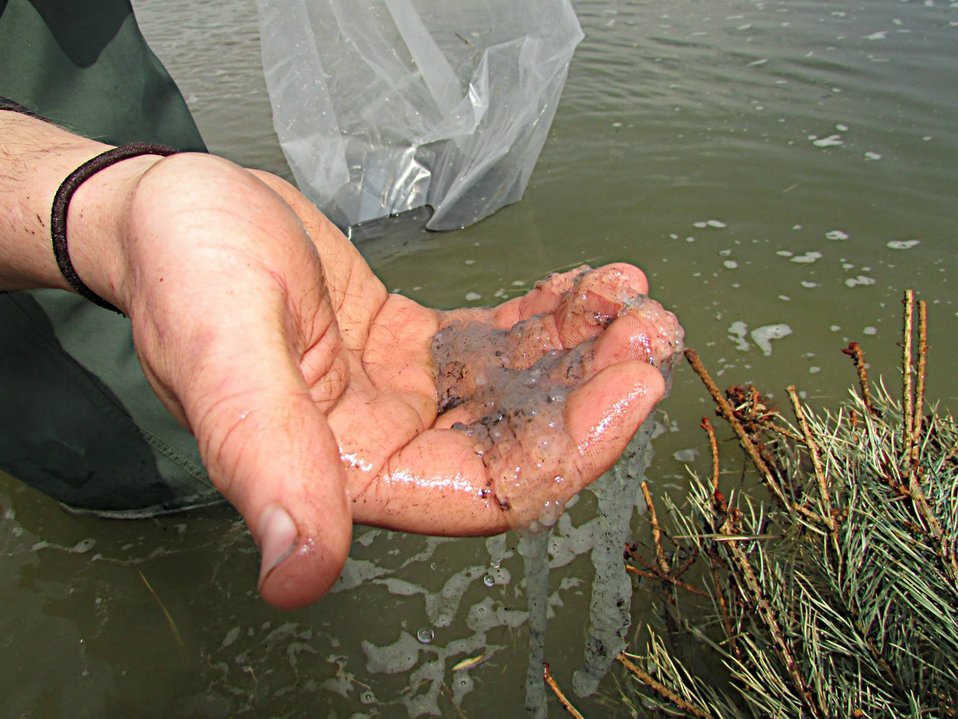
Perch Eggs

Our yellow perch should be hatching any day now!

Working with perch eggs is different from anything else we do. What makes them so unique is the gelatinous strands that they are found in. This gooey substance protects the eggs and helps them cling to structure.

Right before the eggs are about to hatch, we take them to our pond and drape them over a sunken evergreen tree. This simulates what they would experience in the wild.